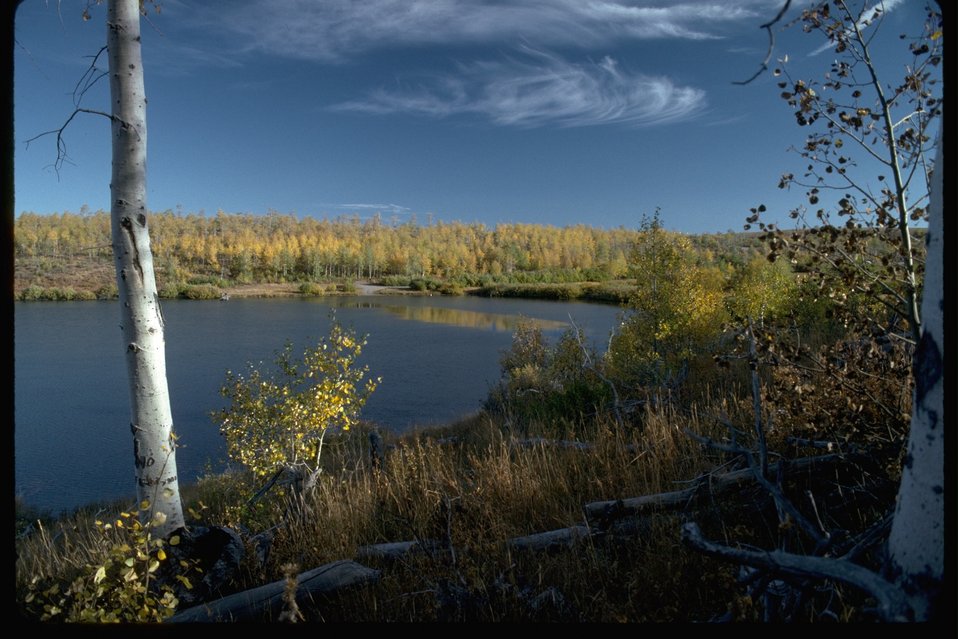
Looking east from the southwest end of Fish Lake with fall foliage in the background.